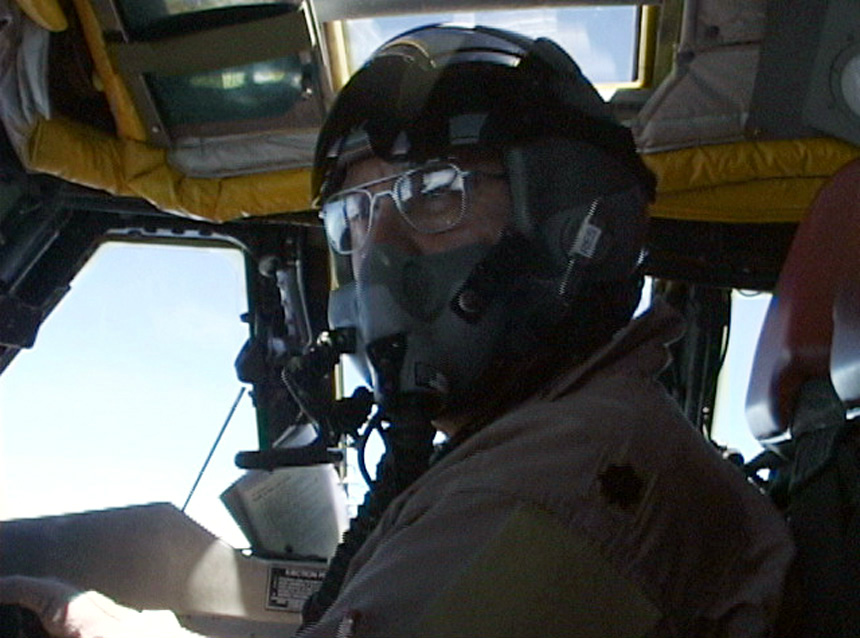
Jankowski

OPERATION ENDURING FREEDOM -- Lt. Col. Bill Jankowski, a pilot from the 40th Expeditionary Bomb Squadron, corresponds with his navigator while on a combat sortie mission. Jankowski was awarded several medals while flying during the Vietnam conflict in 1972. He is a Reserve technician activated here from the 917th Wing at Barksdale Air Force Base, La., supporting Operation Enduring Freedom and other 40th EBS taskings.